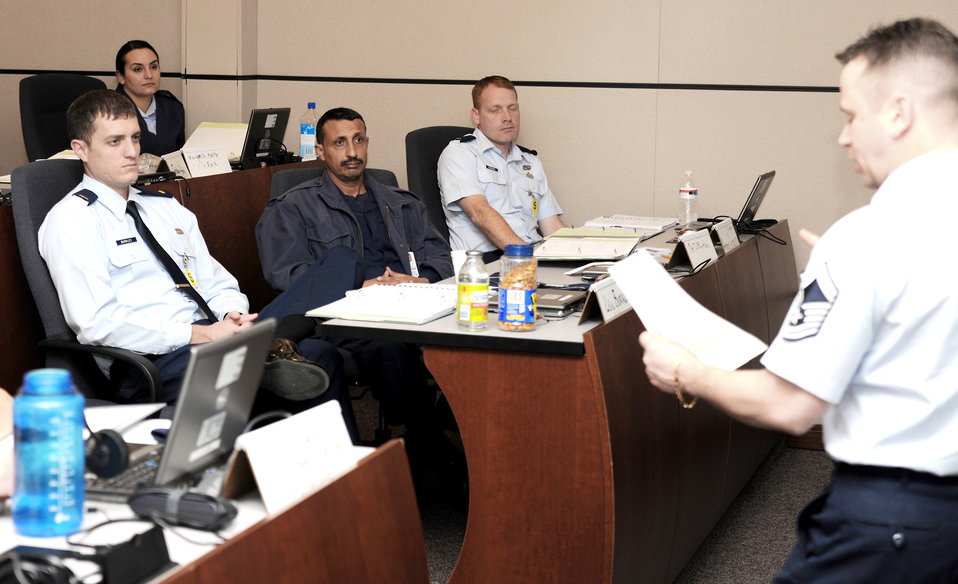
Expeditionary Center Airmen host Yemen air force student

Yemeni air force Capt. Abdurabu Al Matari joins 10 Air Force maintenance officers receiving training on aircraft maintenance management at the Air Force Expeditionary Center's Maintenance Officer Course Feb. 8, 2010, at Joint Base McGuire-Dix-Lakehurst, N.J. The course provides a strategic communication opportunity for the Expeditionary Center.